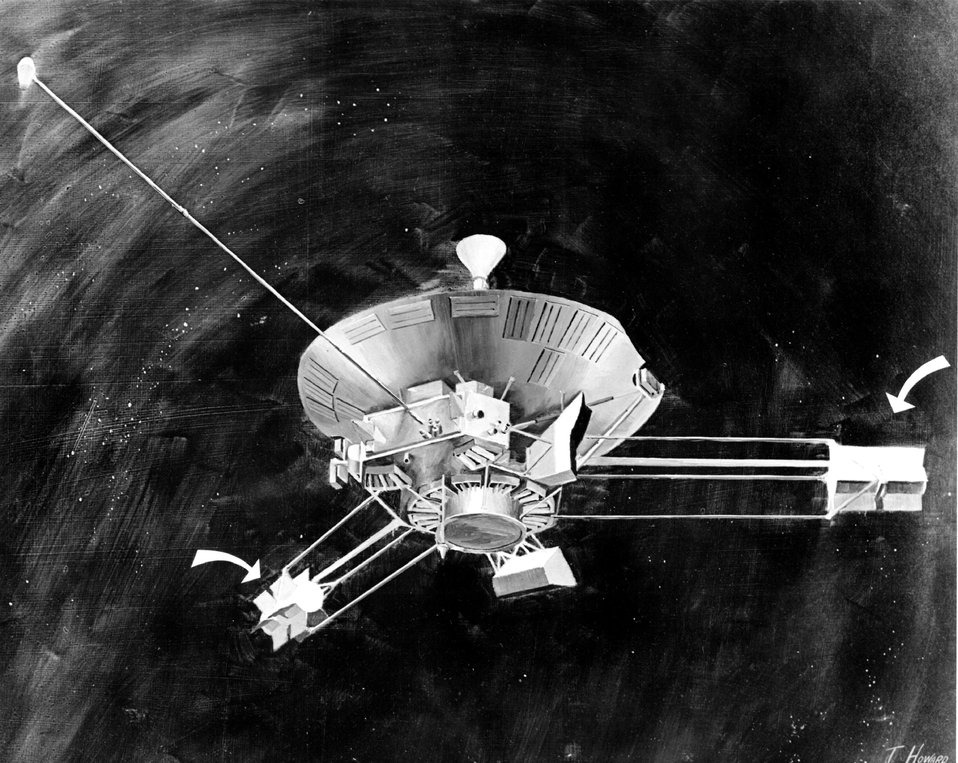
Four AEC-developed radioisotope thermoelectric generators will provide the power for NASA's Pioneer space probes of the planet Jupiter in 1972 and 1973. c. 1971